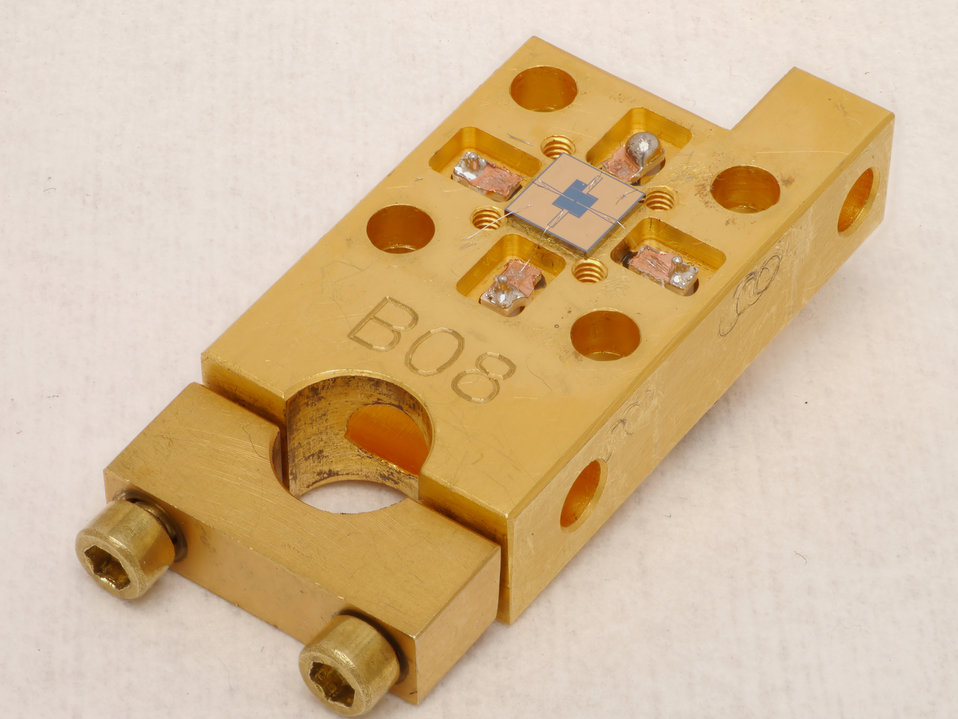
Pulse Position Camera

This NIST device, 1.5 by 3 centimeters in outer dimensions, is a prototype receiver for laser communications enabling much higher data rates than conventional systems. Superconducting detectors in the center of the small square chip register the timing and position of single particles of light.